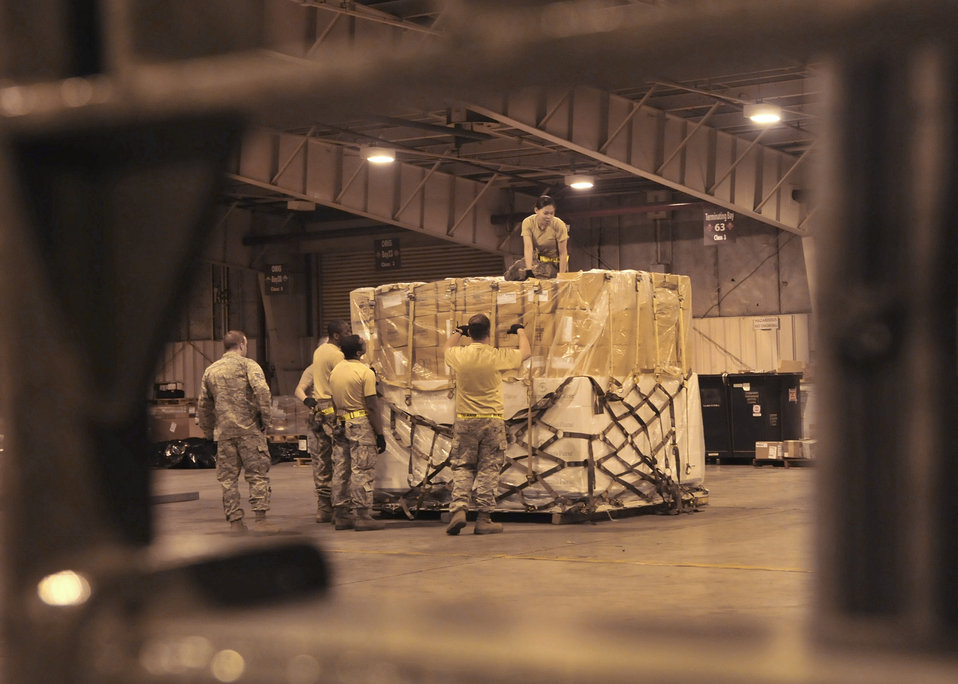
Airmen prepare relief supplies

YOKOTA AIR BASE, Japan -- Airmen from the 374th Logistics Readiness Squadron and 730th Air Mobility Squadron pack and secure a pallet of relief supplies inside a cargo warehouse here March 20. The supplies will be delivered to Northern Japan to support Operation Tomodachi.